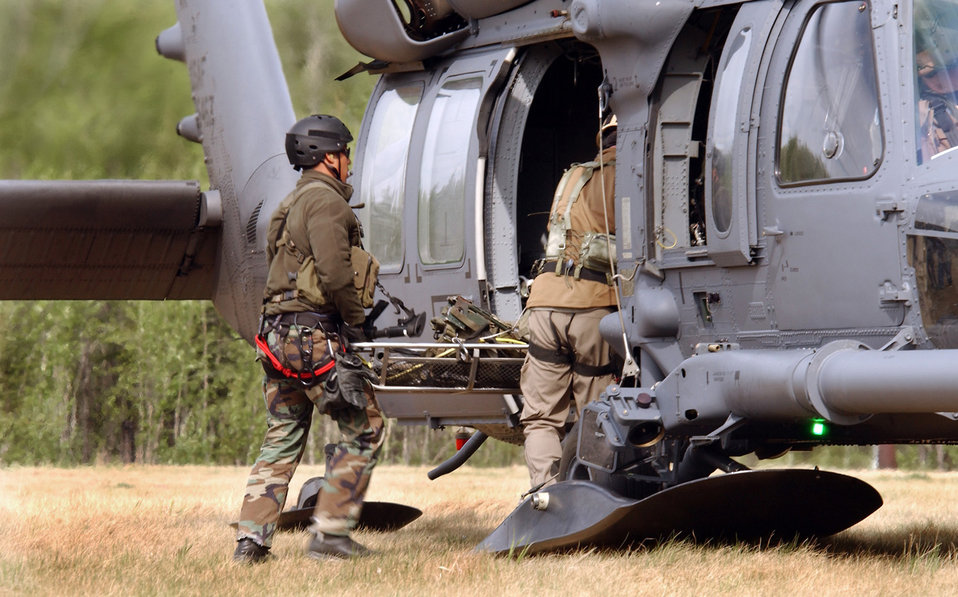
To the rescue during Northern Edge 2006

Airmen from the 31st Rescue Squadron at Kadena Air Base, Japan, load a patient onto an HH-60 Pave Hawk during a combat search and rescue mission for exercise Northern Edge 2006 at Fort Wainwright, Alaska, on Tuesday, June 6, 2006. Northern Edge is a joint training exercise hosted by Alaskan Command. It is one of a series of U.S. Pacific Command exercises that prepare joint forces to respond to crises in the Asian Pacific region.